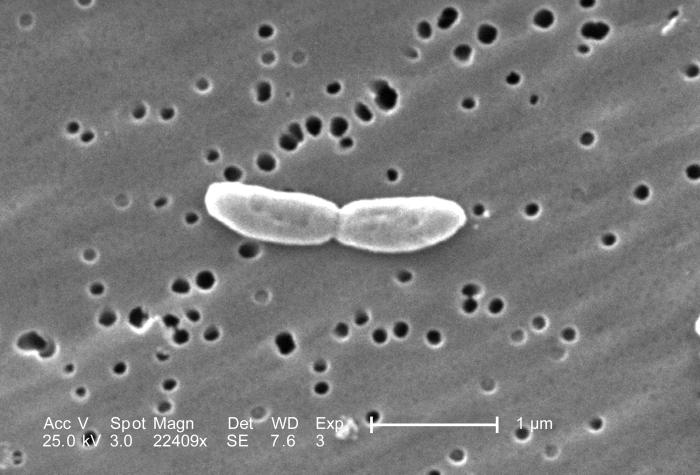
At a very high magnification of 22,409X, this scanning electron micrograph (SEM) revealed some of the morphologic details displayed by two joined Gram-negative Escherichia coli bacteria. These bacteriia were members of the strain, 0:169 H41 ETEC (Enterotoxigenic E. coli).Enterotoxigenic E. coli, a common cause of bacterial diarrhea...